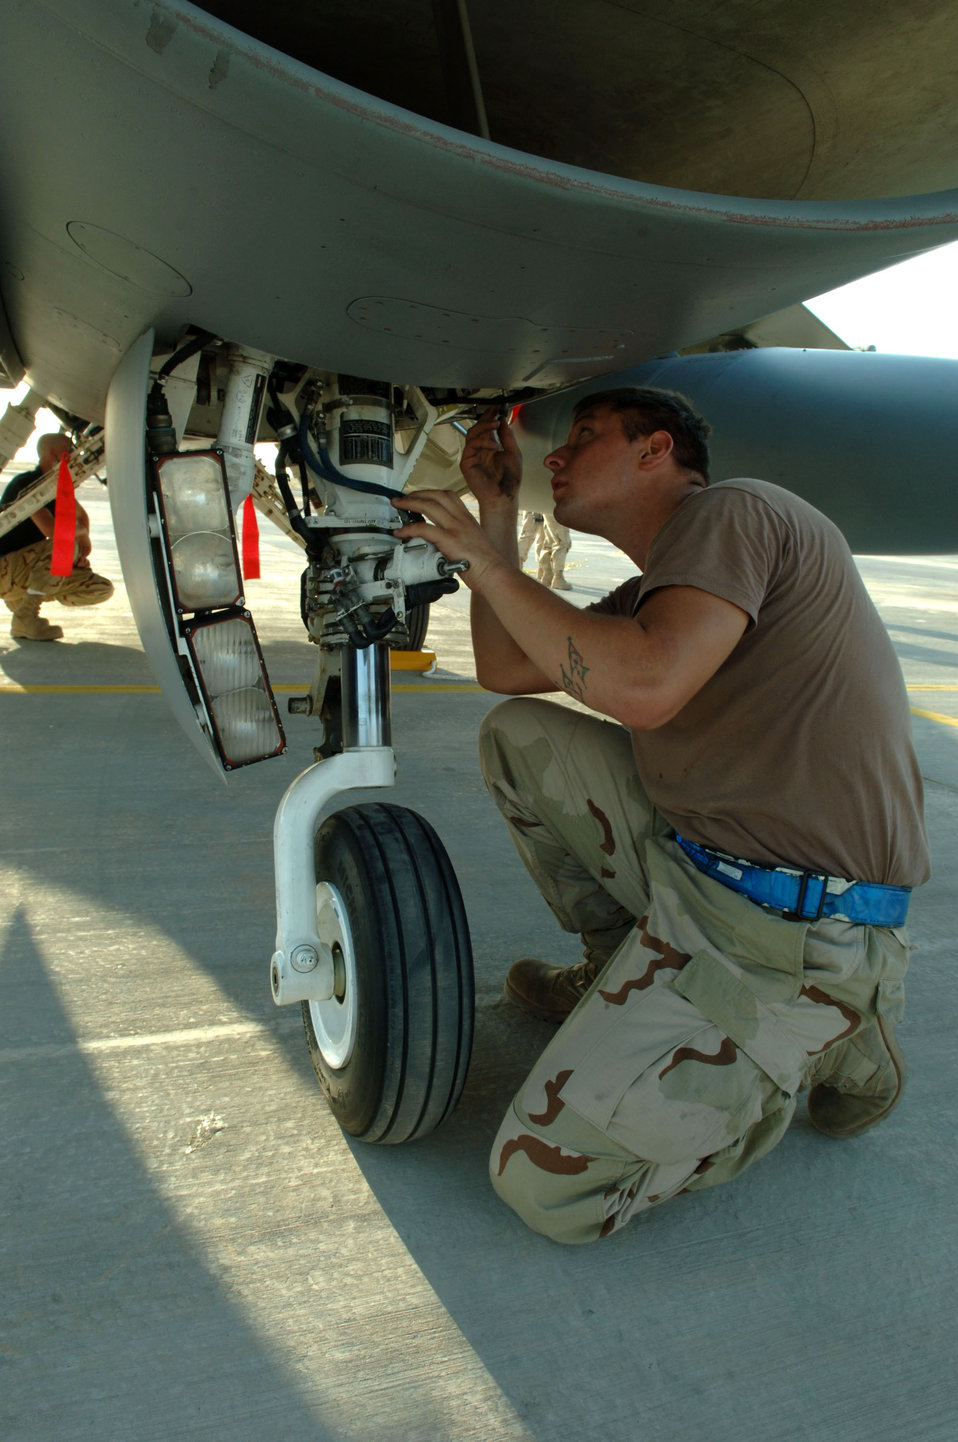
Cannon F-16s support Operation Iraqi Freedom

Senior Airman Airman Bradley Schuster performs post-flight maintenance on an F-16 Fighting Falcon at Balad Air Base, Iraq, Sept. 9. Airman Schuster is deployed from Cannon Air Force Base, N.M., and is assigned to the 332nd Expeditionary Aircraft Maintenance Squadron.